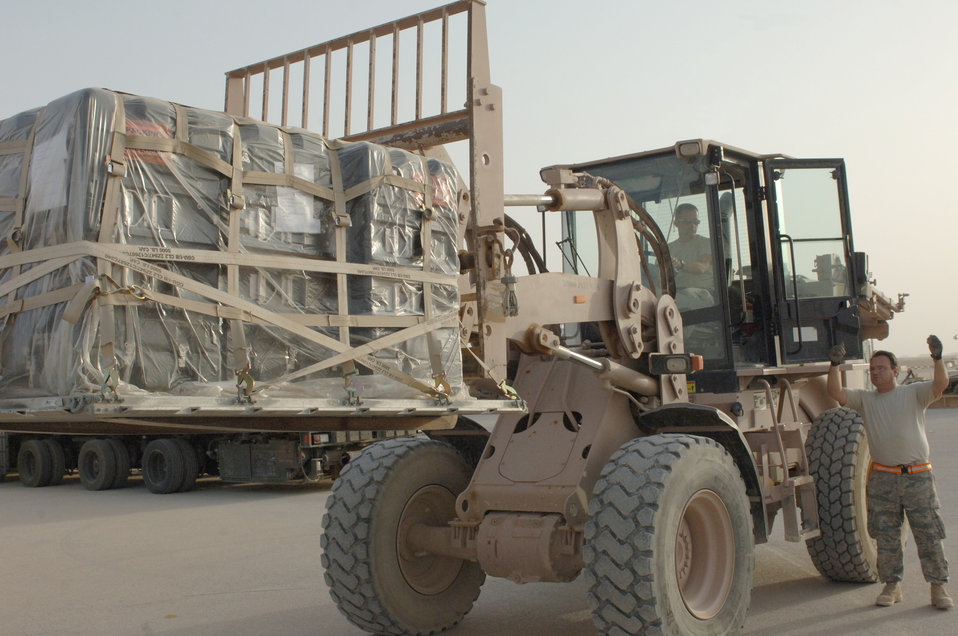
Al Asad aerial porters

Tech. Sgt. John Leeder guides Staff Sgt. Daniel Desautels, to place cargo onto the back of a 60K aircraft cargo loader May 14, 2010,at Al Asad Air Base, Iraq. Sergeants Leeder and Desautels are 532nd Expeditionary Operations Support Squadron aerial transporters.